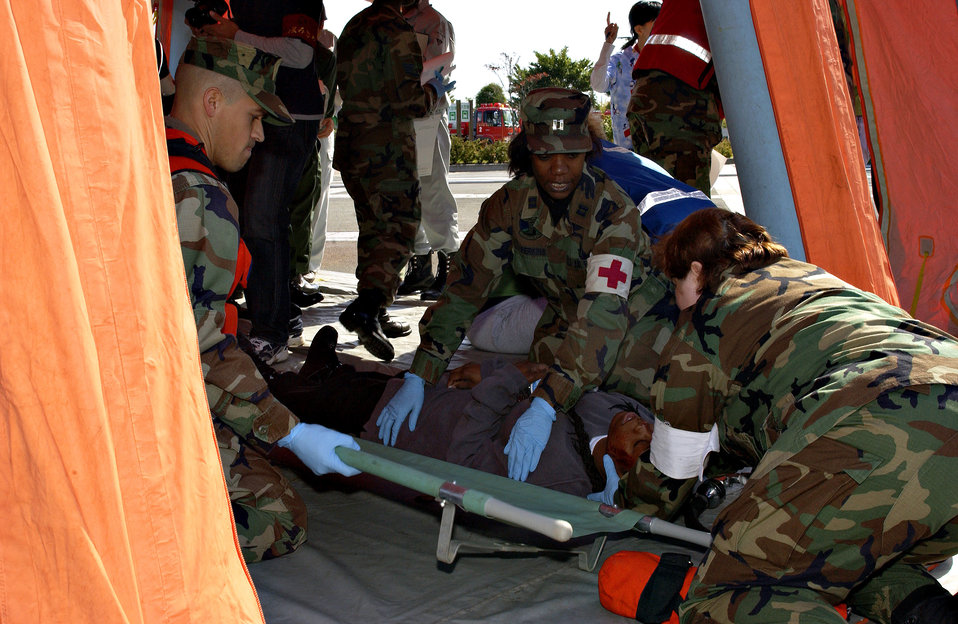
Misawa partners with city for disaster exercise

Navy Petty Officer 2nd Class Orlando Garcia (from left), Capt. Mefter Perkins and Capt. Deborah Hoffman prepare a victim for transport as part of the Misawa City Disaster Preparation Exercise at the Misawa Ice Arena Oct. 14 in Japan. This exercise involved members from the U.S. Air Force and Navy, as well as Misawa City first responders.